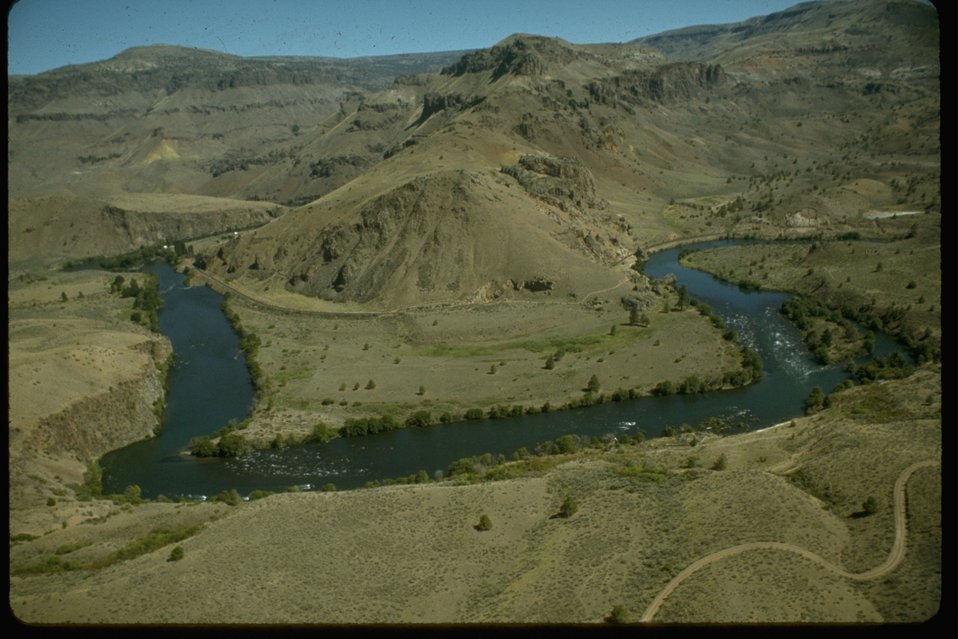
Davidson Flat of the Deschutes River Area.